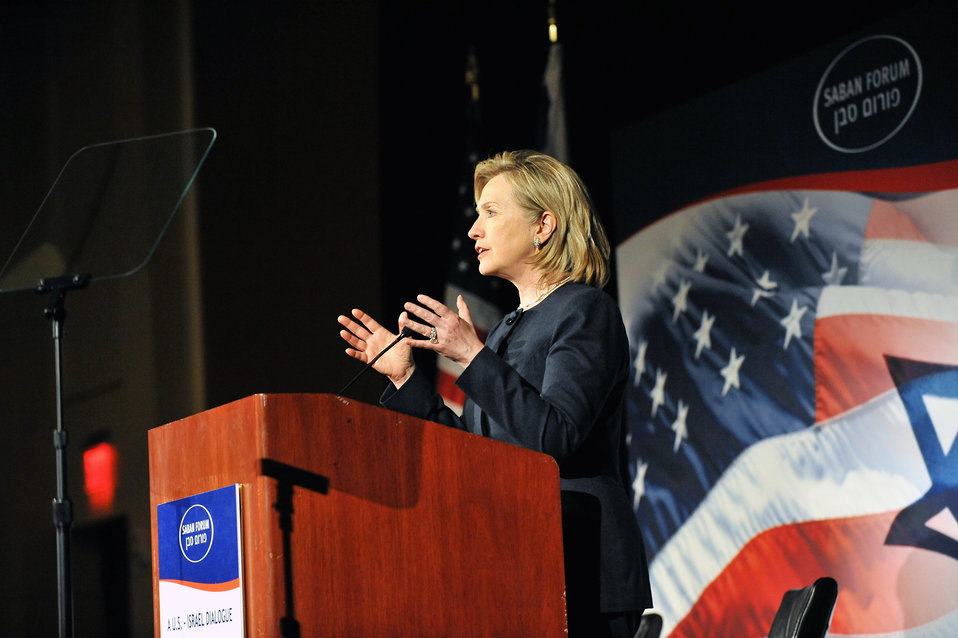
Secretary Clinton Delivers Remarks at the Saban Forum Gala Dinner

U.S. Secretary of State Hillary Rodham Clinton delivers remarks at the Saban Forum Gala Dinner at the Mandarin Hotel in Washington, D.C., on December 10, 2010.